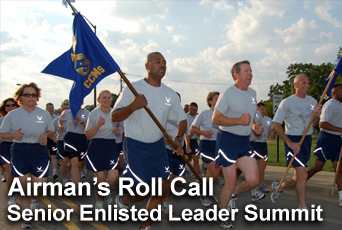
Airman's Roll Call highlights Senior Enlisted Leader Summit

The Airman's Roll Call for Aug. 1 highlights the first Senior Enlisted Leader Summit which was held at Maxwell Air Force Base, Ala., Gunter Annex. More than 360 senior enlisted leaders met July 22 to 27 to discuss the challenges and opportunities facing Airmen today.